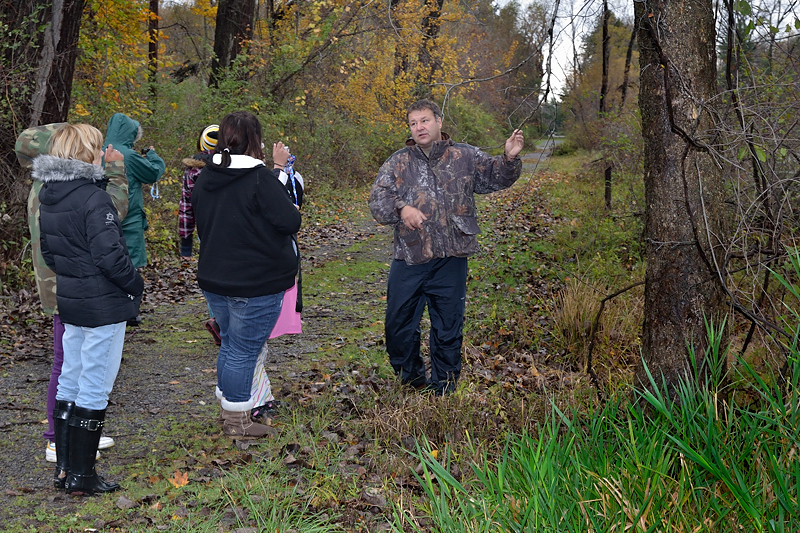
McKinley High School Students participating in SNAP!

Russ Liss, a teacher at McKinley High School in Buffalo, NY, talks to his students about some of the observations made at Reinstein Woods Nature Preserve